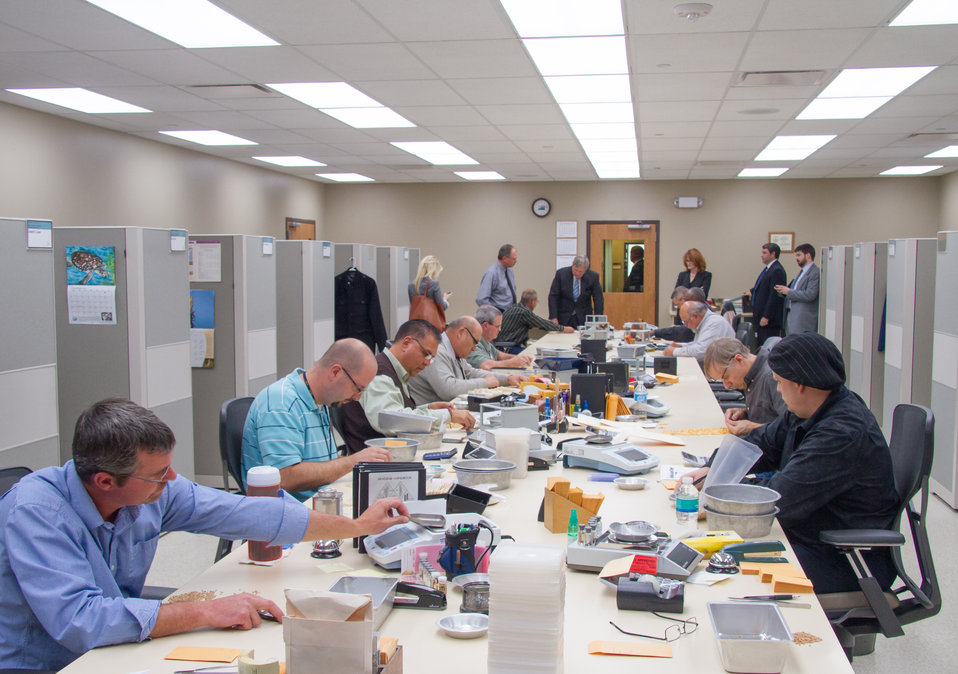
Agriculture Secretary Tom Vilsack visited the grain grading laboratory of the Grain Inspection, Packers and Stockyards Administration (GIPSA), Board of Appeals and Review in Kansas City, MO, on Wednesday, Oct. 23, 2013.